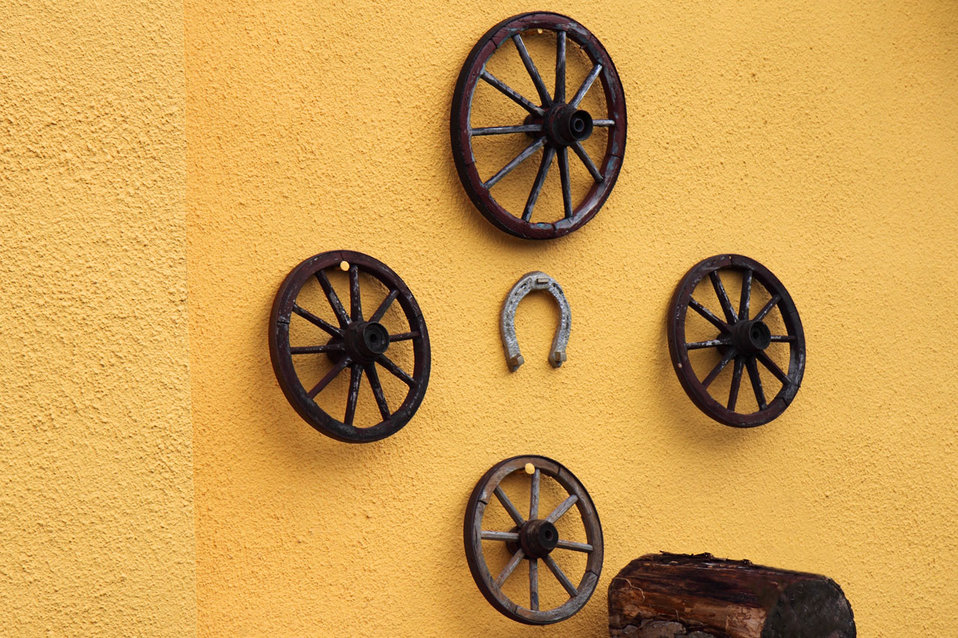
Wooden cart wheels

Old wooden cart wheels on the wall.